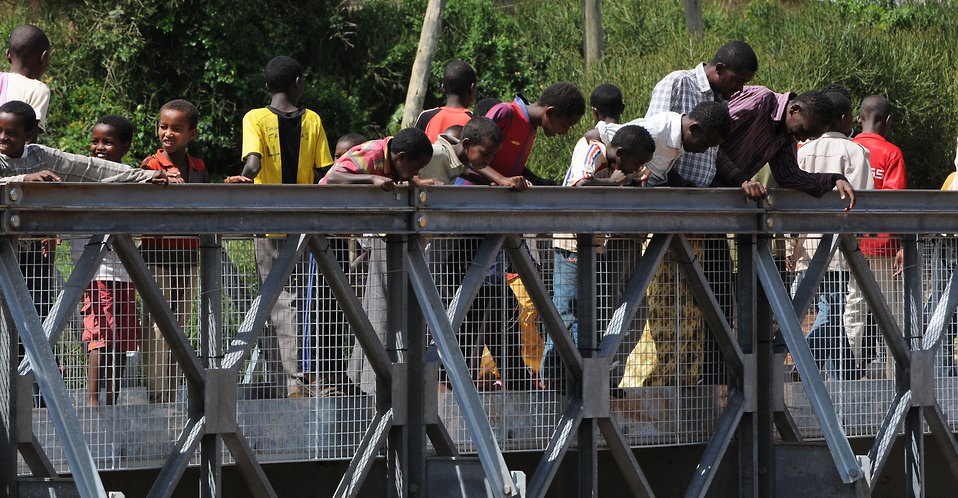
144 hours in Ethiopia: The Negele Borena Bridge

Local residents stare down at the river below from the recently dedicated bridge in Negele Borena, Ethiopia, Dec. 6, 2011. Each year during the rainy season, the river claims the lives of about three people who attempt to ford through the strong currents and deep waters.